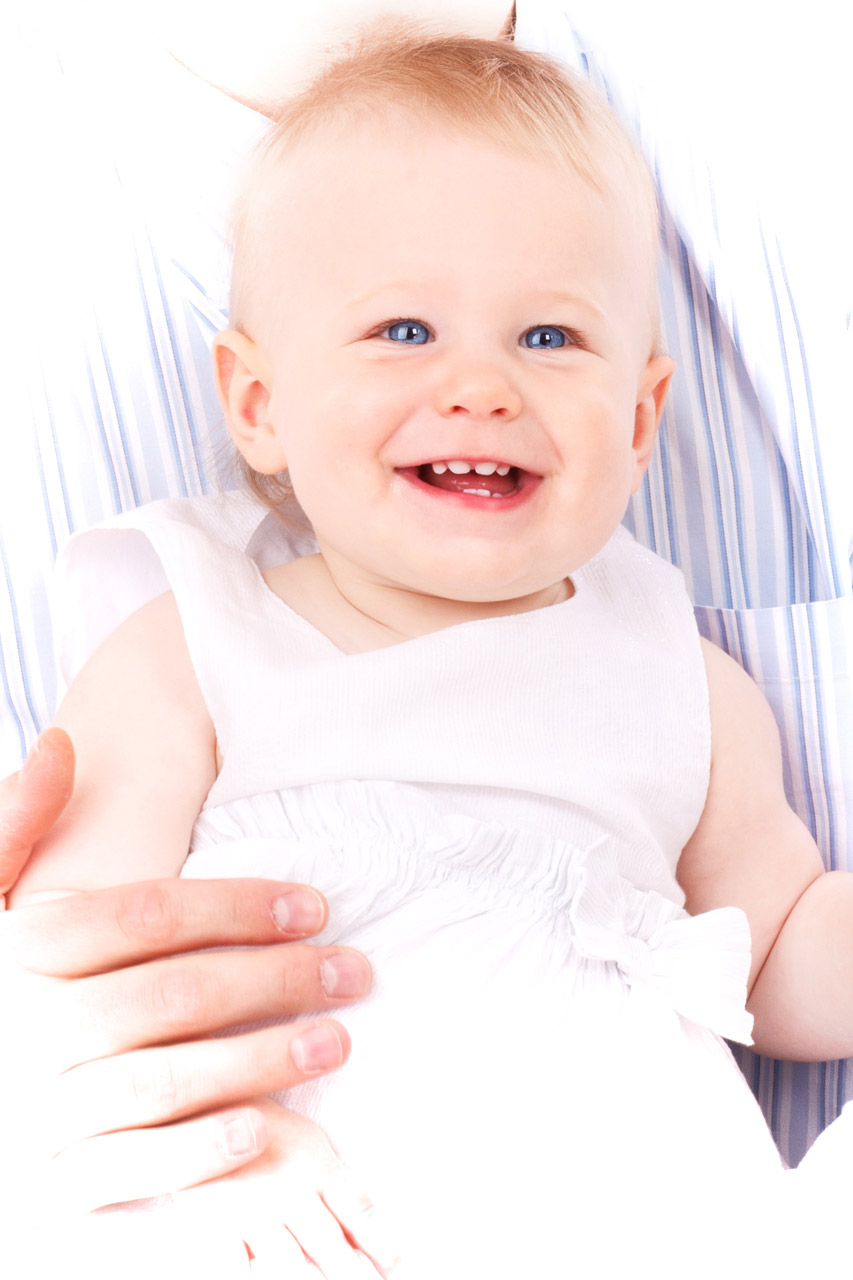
Happy smiling baby

Little baby girl with blue eyes smiling.